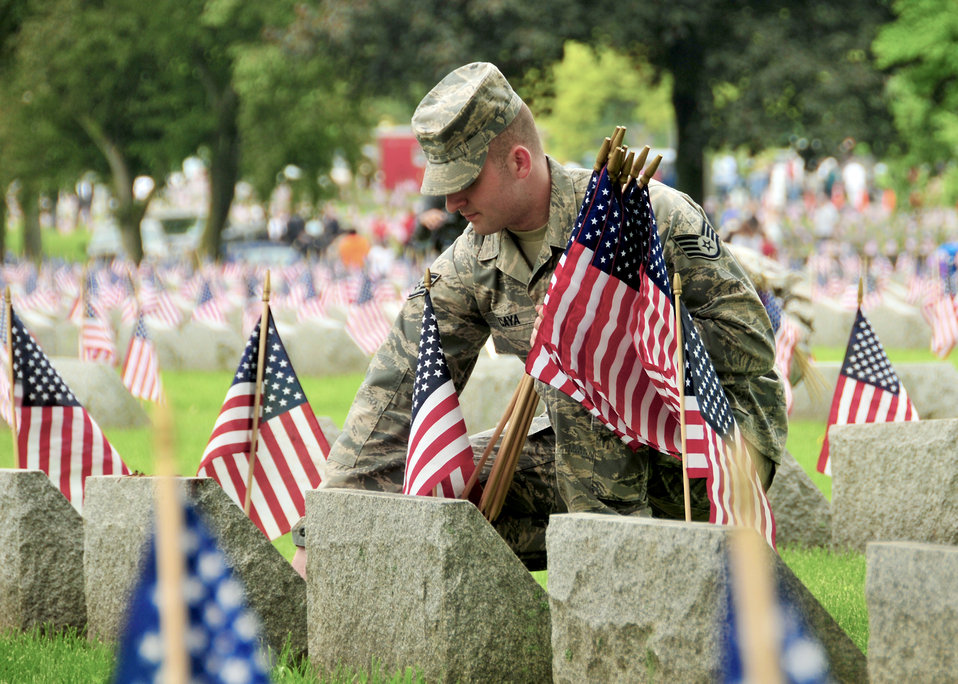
Honoring the fallen

Staff Sgt. Andrew Caya places an American flag on a grave during a Memorial Day ceremony May 30, 2011, at Forest Lawn Cemetery in Buffalo, N.Y.